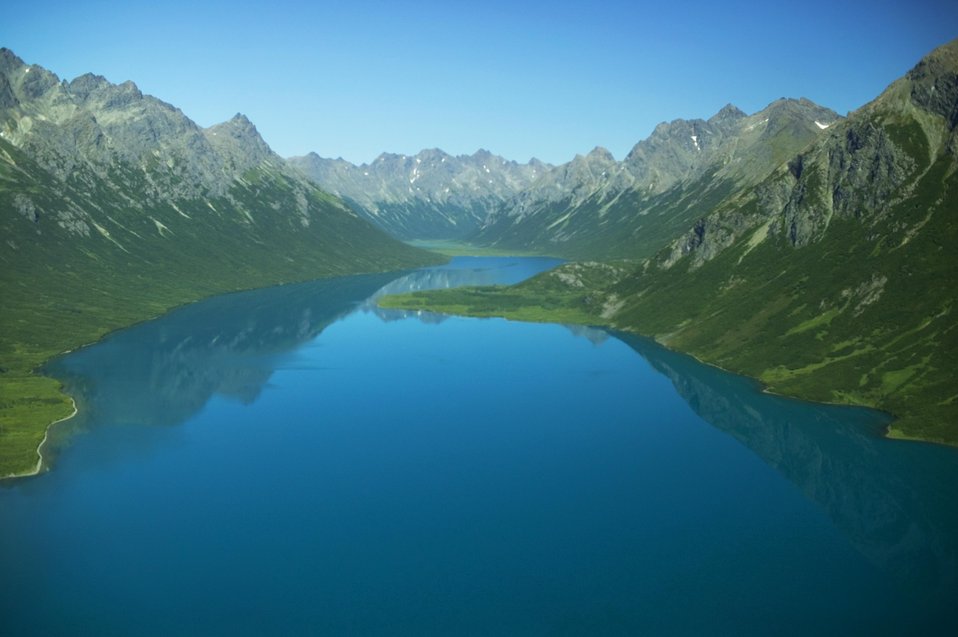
Togiak Nation Wildlife Refuge